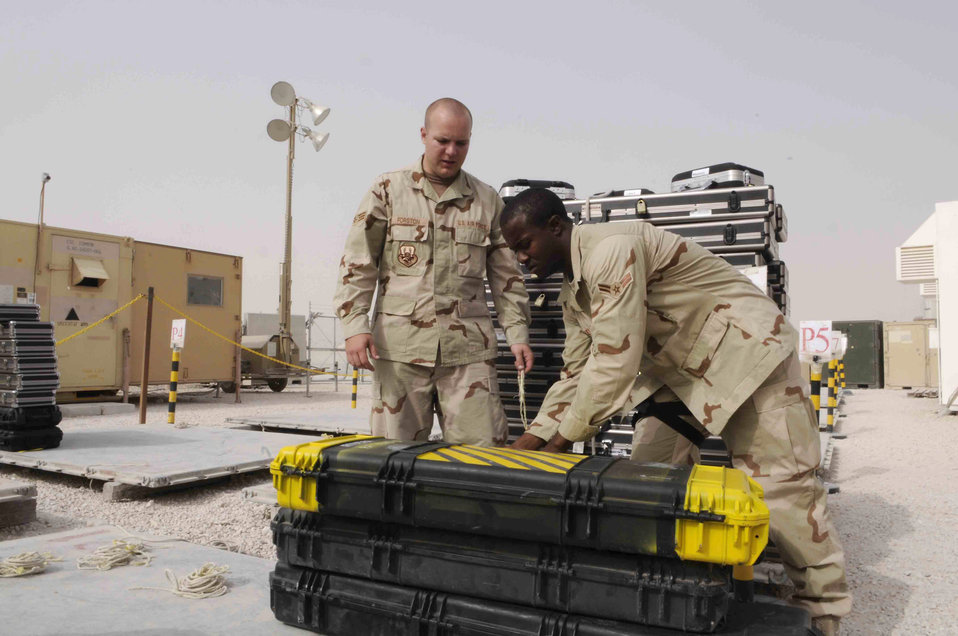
Distrution center saves lives, makes travel easier

Senior Airman David Fortson and Airman 1st Class Chad Bailey prepare to secure weapons onto pallets at the ammunition storage facility April 29 at a Southwest Asia air base. Airmen of the Expeditionary Theater Distribution Center secure and store weapons for more than 10,000 deployed members each month. Airmen Fortson and Bailey are assigned to the 379th Expeditionary Logistics Readiness Squadron.